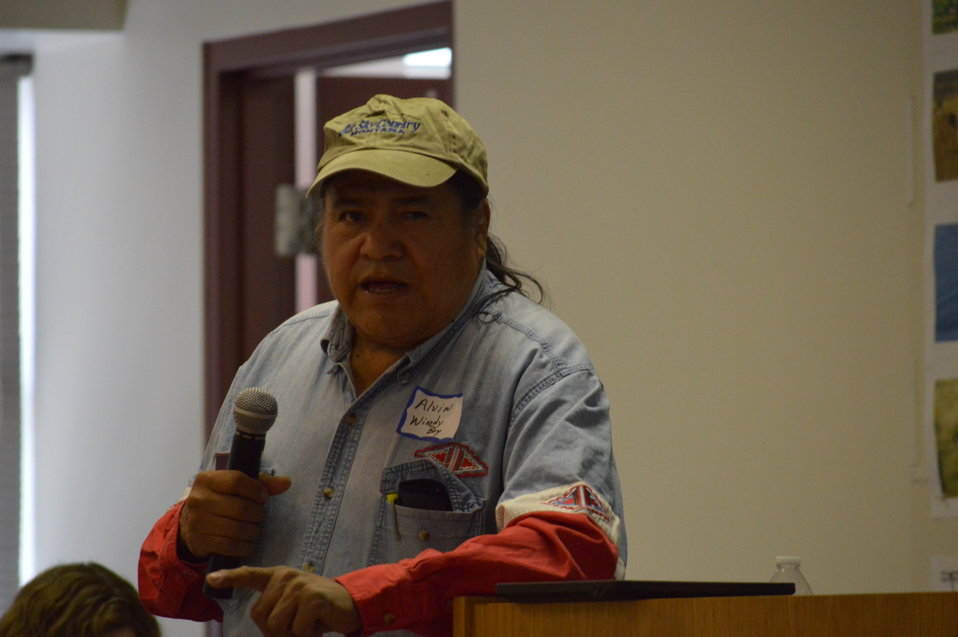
Eagle Summit III

Alvin Windy Boy speaks at the Eagle Summit III in Denver, Colorado on March 20, 2014 at the Rocky Mountain Arsenal National Wildlife Refuge.